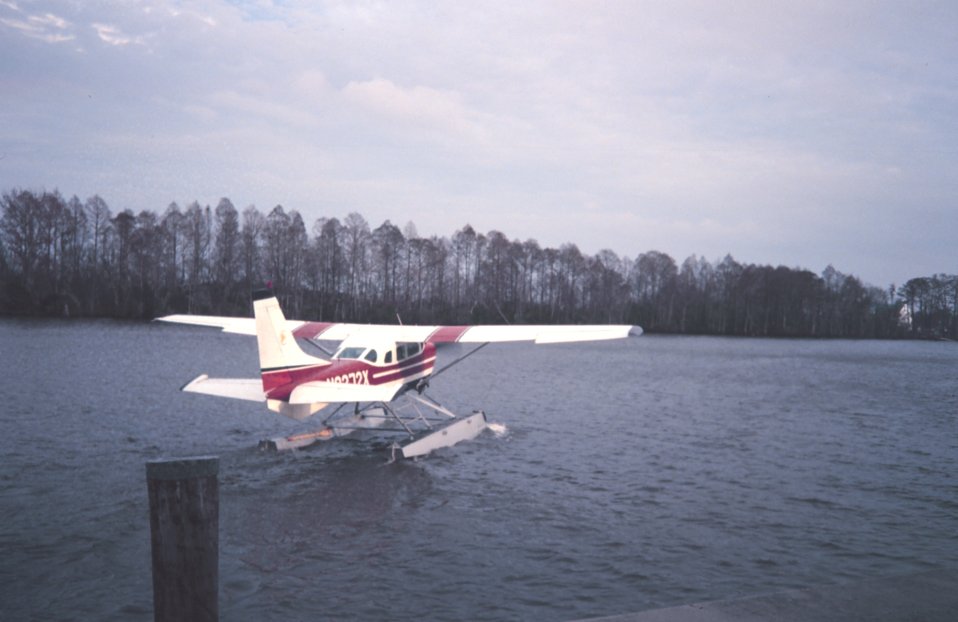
Seaplane taking off from the Tchefunte River to East Timbalier Island area.